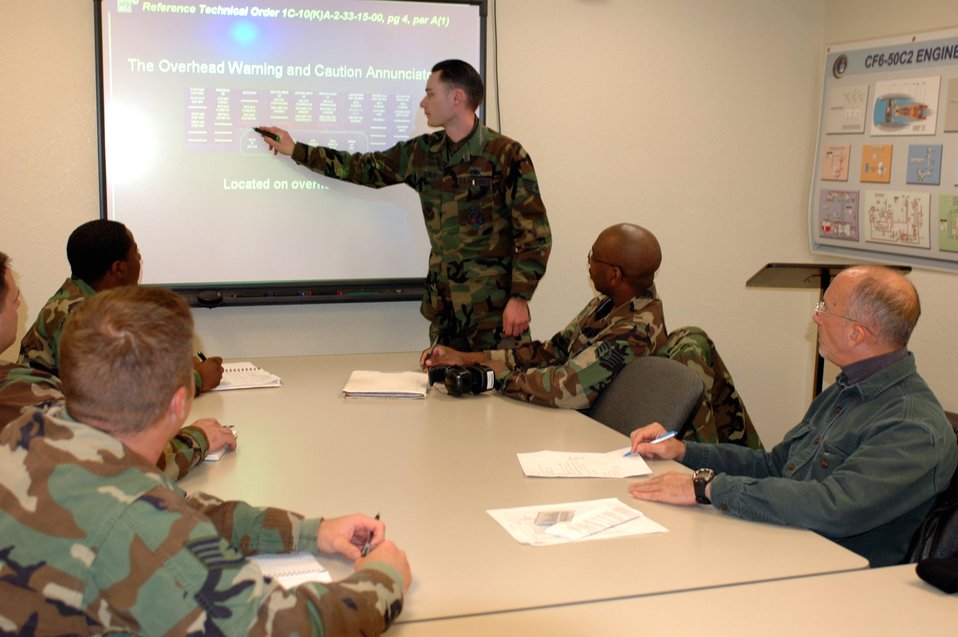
Travis trains PACAF crews to maintain KC-10s

Staff Sgt. Wayne Lewen explains the KC-10 Extender Emergency Lighting System during the classroom portion of the course Jan. 17 at Travis Air Force Base, Calif. Sergeant Lewen is assigned to the 60th Maintenance Operations Squadron at Travis AFB. Students in the course will receive training and certification on 79 KC-10 maintenance tasks previously reserved for crew chiefs that deployed with the aircraft.